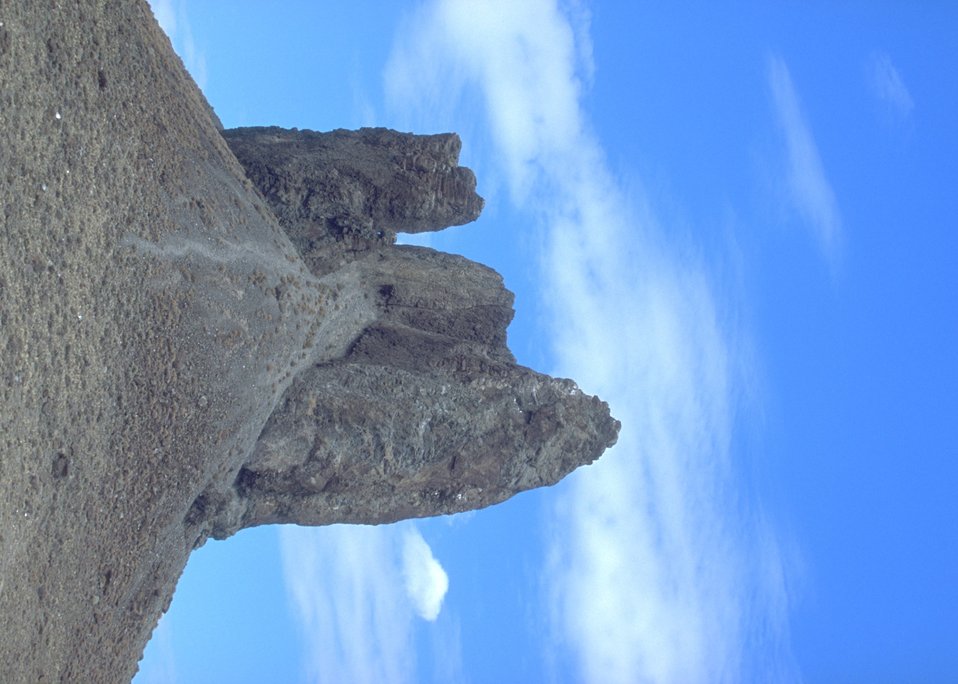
Boar's Tusk, Rock Springs Field Office.